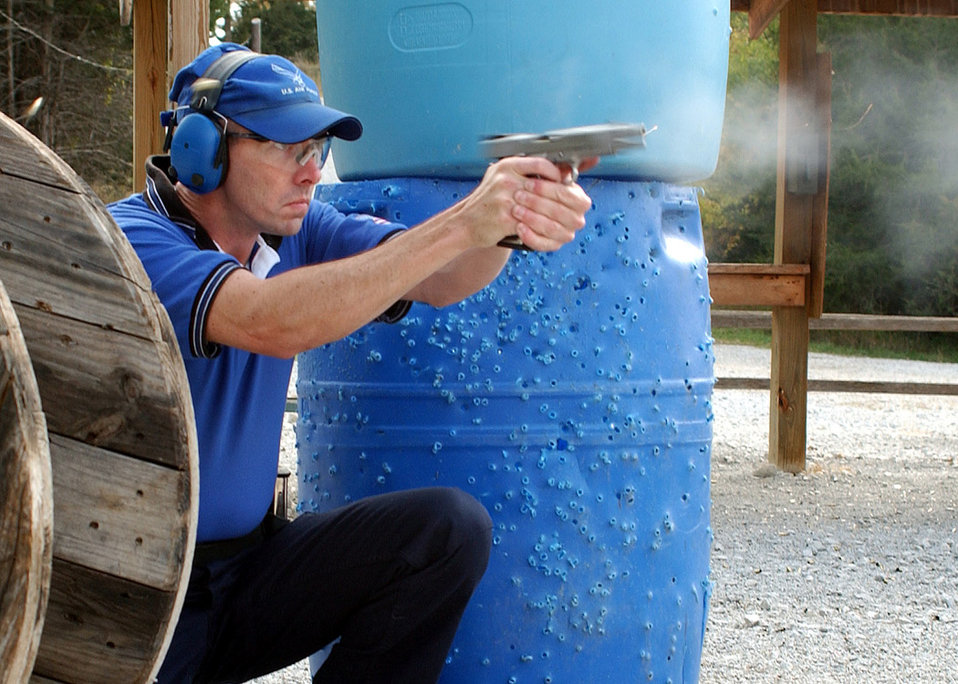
Athletes of the year

LEWISVILLE, Neb. (AFPN) -- Maj. Roger Sherman takes aim at targets on the Eastern Nebraska Gun Club firing range here. The Air Force Services Agency named Major Sherman the 2005 Male Athlete of the Year. The major is a special assistant to the commander of U.S. Strategic Command at Offutt Air Force Base, Neb.